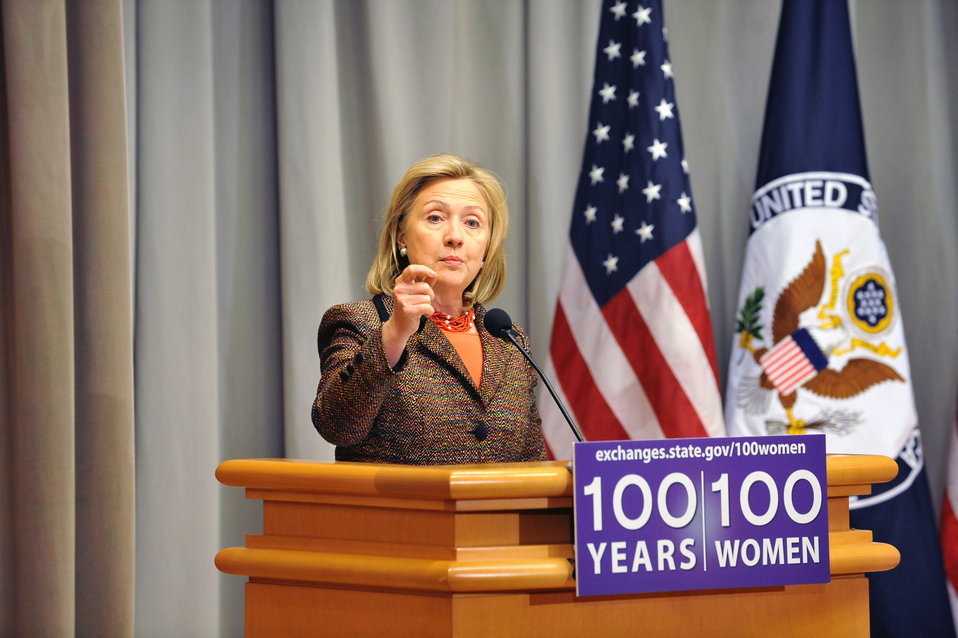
Secretary Clinton Launches the “100 Women Initiative: Empowering Women and Girls through International Exchanges'

U.S. Secretary of State Hillary Rodham Clinton launches the “100 Women Initiative: Empowering Women and Girls through International Exchanges' in the Marshall Conference Center at the U.S. Department of State in Washington, D.C., on March 7, 2011.